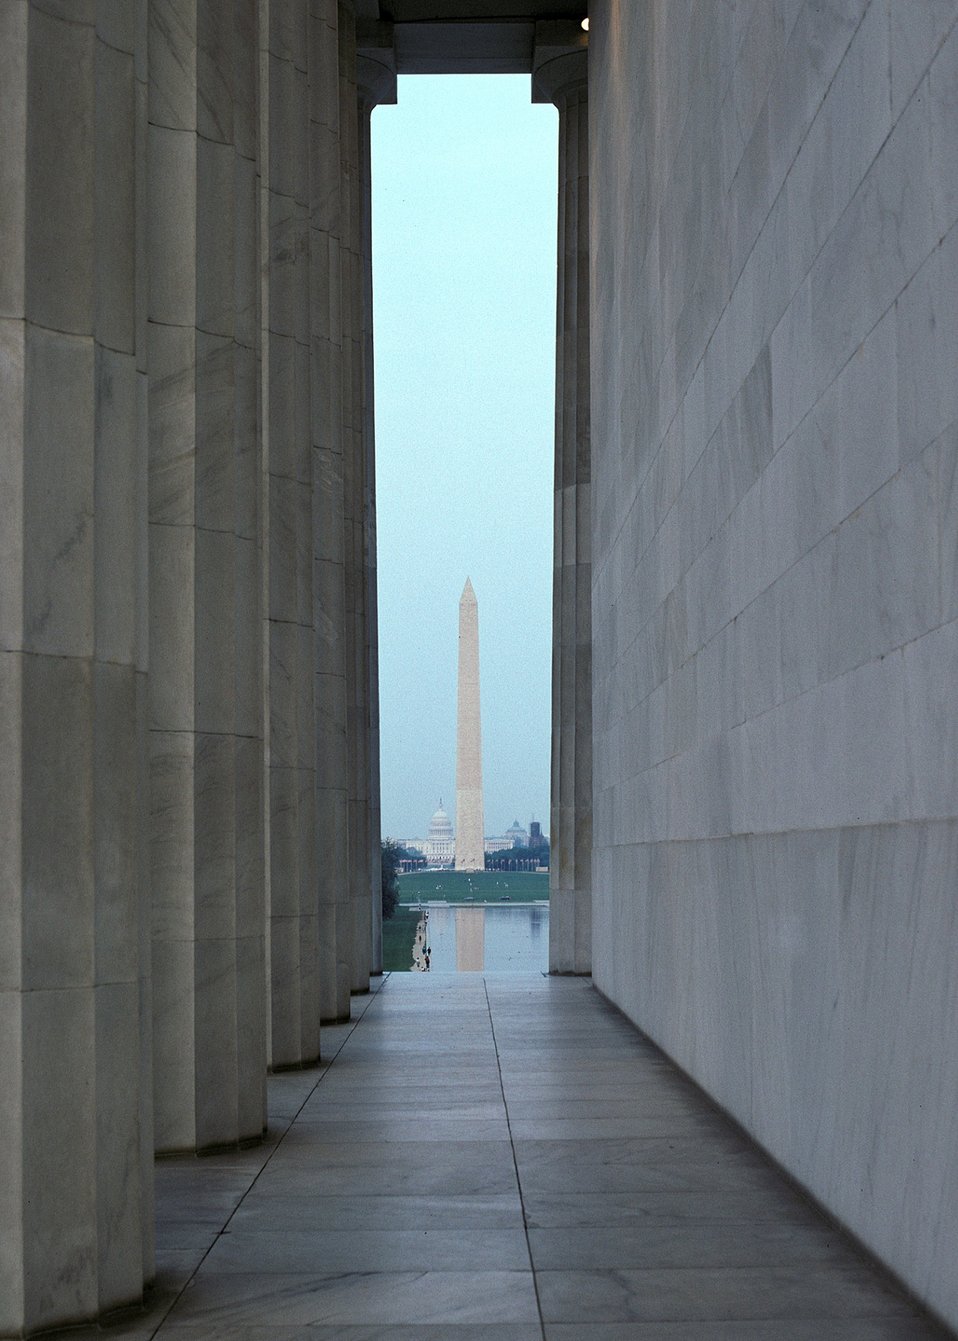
View of Washington Monument and the U. S. Capitol Building as seen from the Lincoln Memorial.